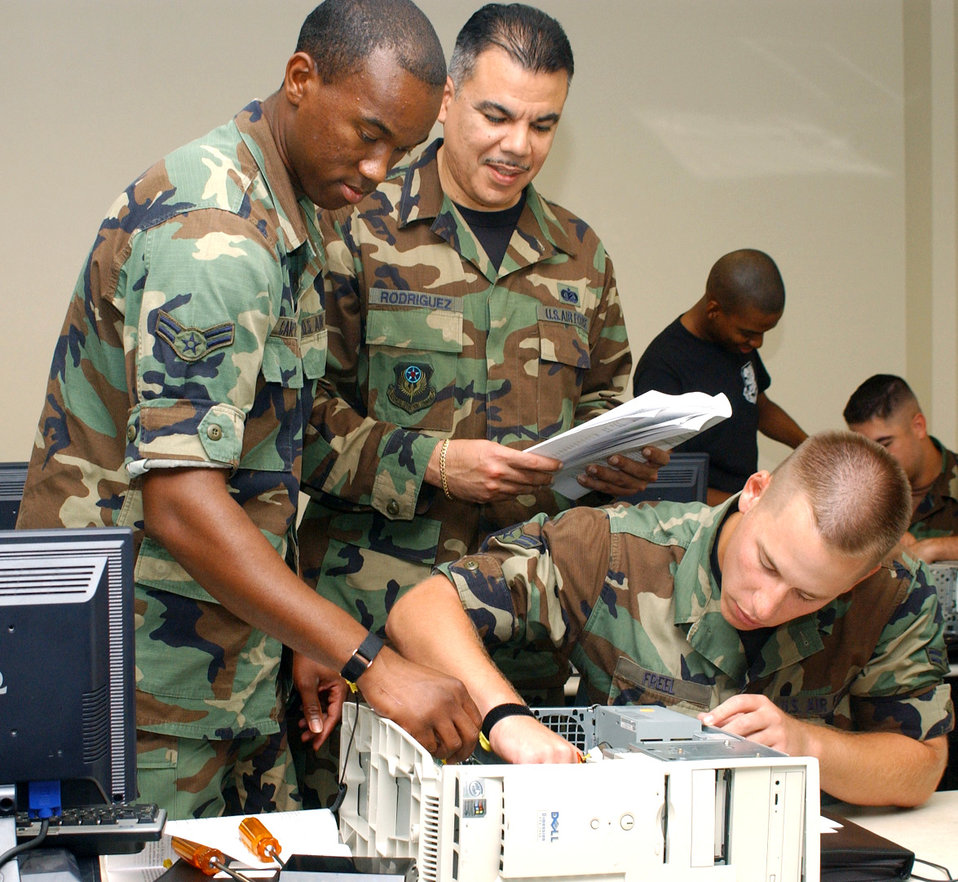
Tenacious trainers triumph in Katrina's wake

(From left) Airman 1st Class David Carter, Tech. Sgt. Gilbert Rodriguez and Airman 1st Class David Freel install a hard drive during an information management course recently at Keesler Air Force Base, Miss. Airmen Carter and Freel are Sergeant Rodriguez' students. Sergeant Rodriguez, from Hurlburt Field, Fla., is at Keesler on a six-month temporary duty assignment augmenting the 336th Training Squadron training team.